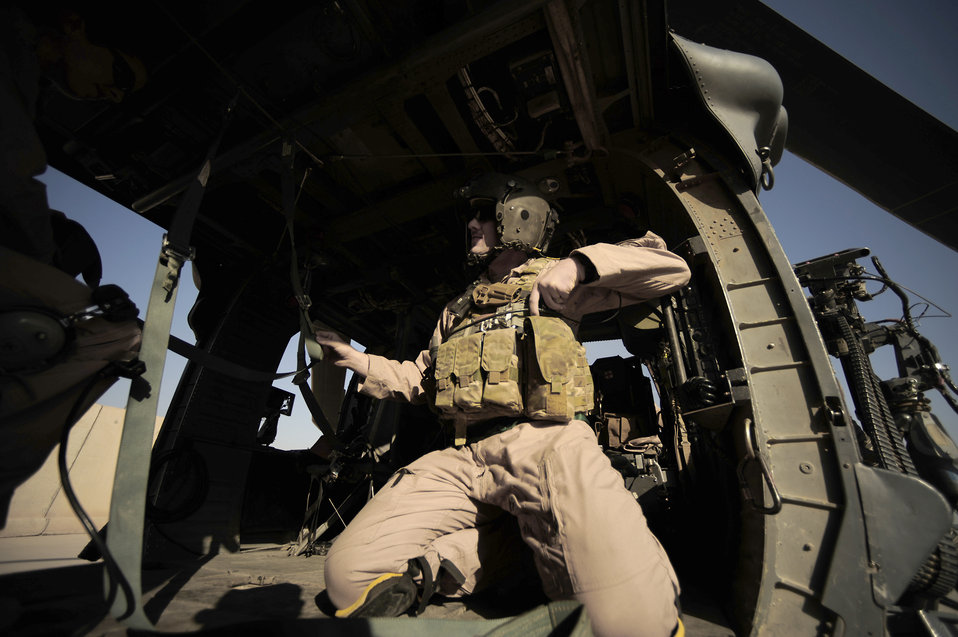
Pave Hawk mission over Iraq

Staff Sgt. Aaron Walton locks his gunner's belt in place before a flying mission July 12, 2010, at Joint Base Balad, Iraq. Sergeant Walton is an HH-60G Pave Hawk flight engineer assigned to the 64th Expeditionary Rescue Squadron.